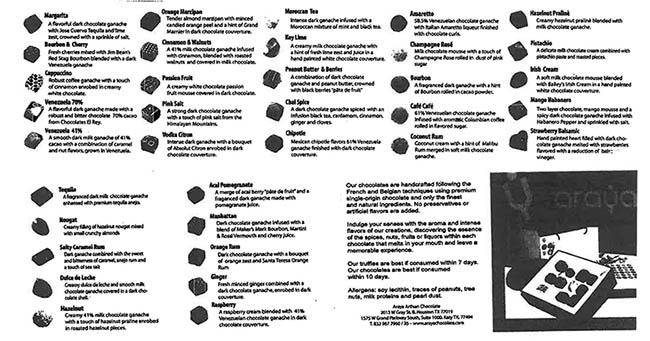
RECALLED – Chocolate Bars, Marshmallows, Dry Fruits, and Chocolate Gift Boxes

January 23, 2014 – Product Recall – Araya Inc. Issues Allergy Alert on Undeclared Tree Nuts, Wheat, Milk and Soy in Their Chocolate Bars, Marshmallows, Dry Fruits and Chocolate Gift Boxes.